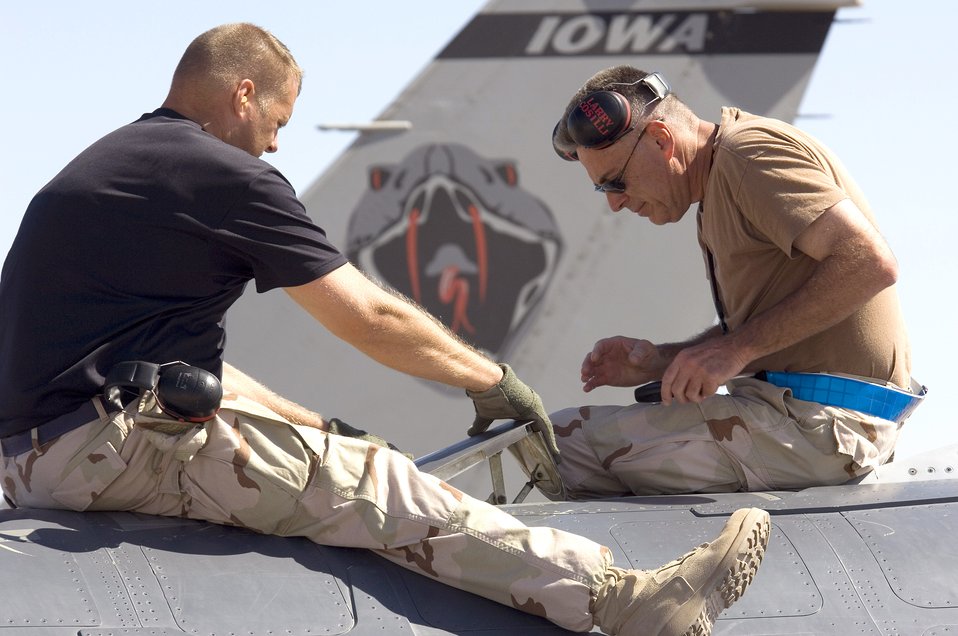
'Coronet East' flies home

MORON AIR BASE, Spain -- Tech. Sgt. Stephen Jennings (left) and Master Sgt. Larry Lostell check an F-16 Fighting Falcon's inflight refueling door after landing here with